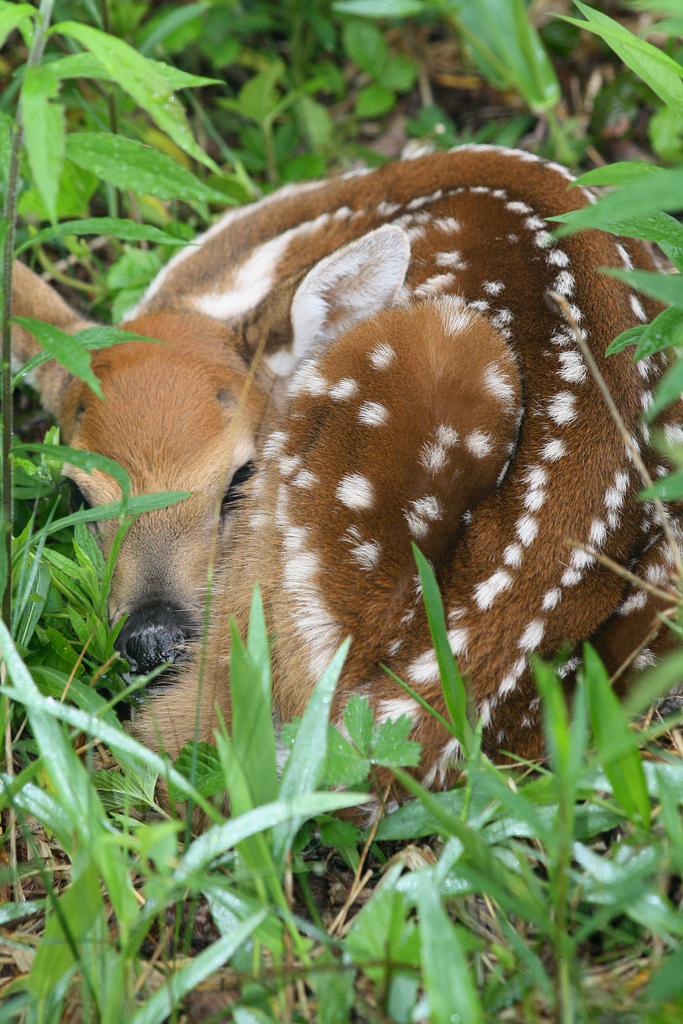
Speckled Fawn

Connect the dots to find this speckled fawn.